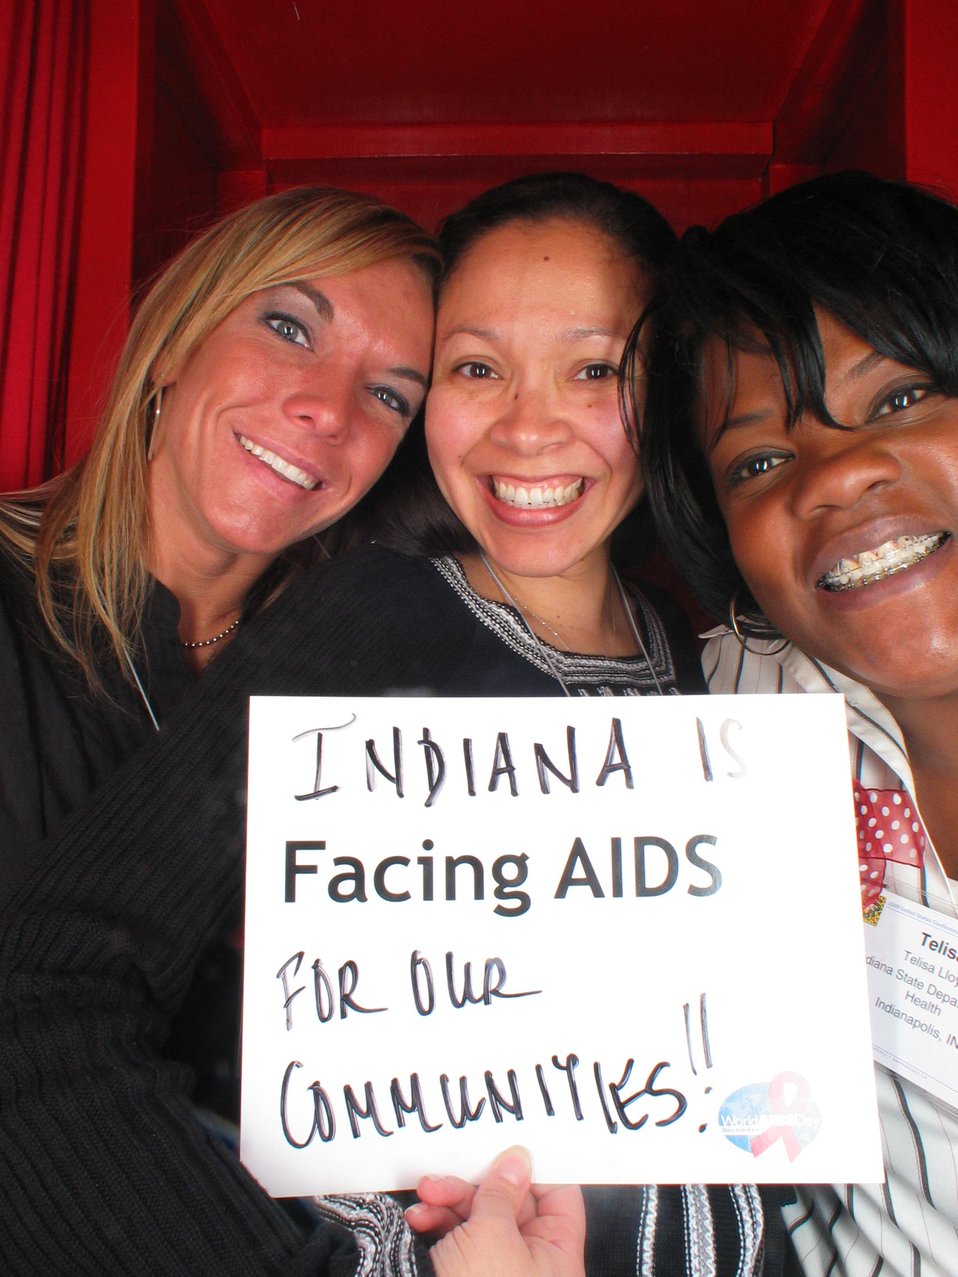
Indiana Facing AIDS for our communities!!